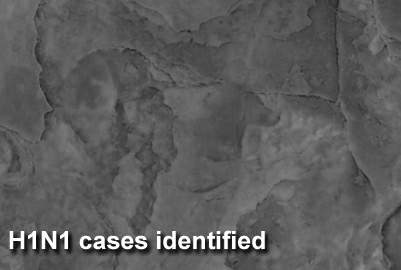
H1N1 cases identified at Hurlburt

Four Hurlburt Field Airmen have tested positive for the H1N1 virus in July and 59 others currently have symptoms consistent with the H1N1 virus.